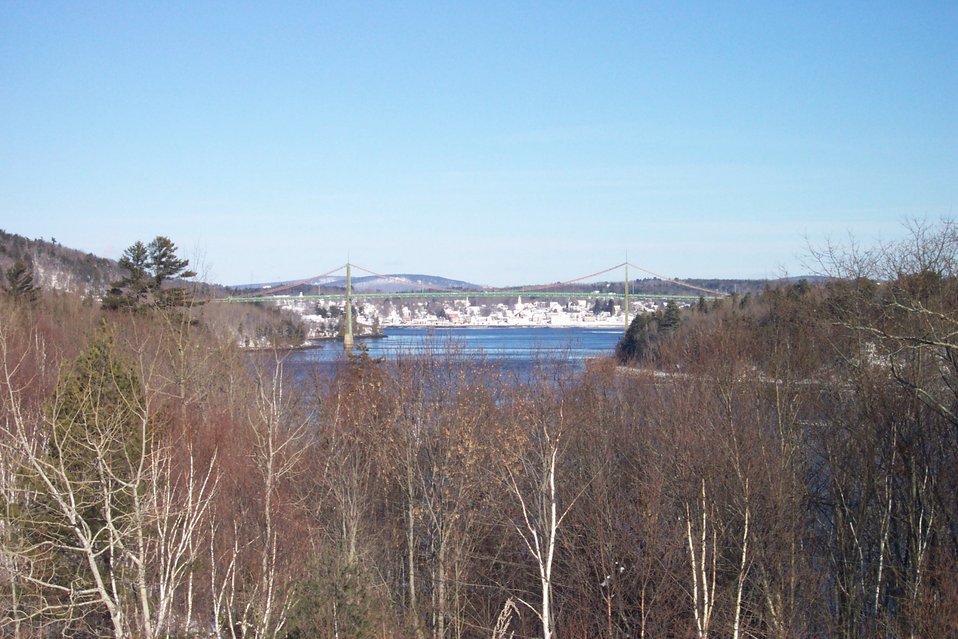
The Waldo-Hancock suspension bridge with Bucksport in the background.